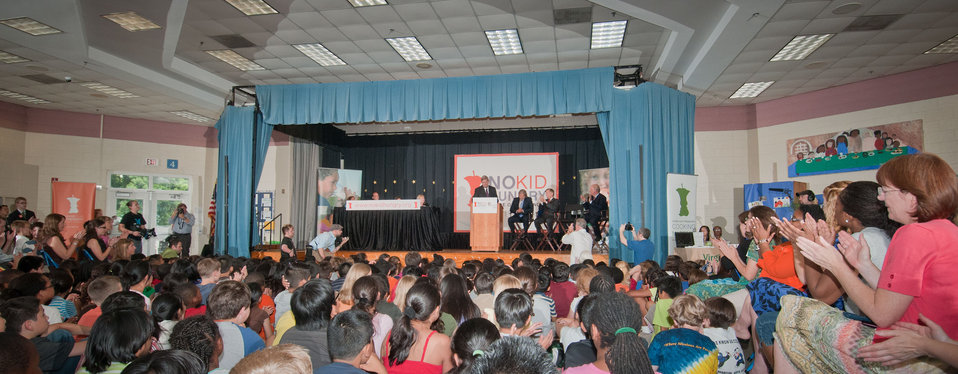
U.S. Department of Agriculture Secretary Tom Vilsack, helped launch the Virginia No Kid Hungry Campaign at Barcroft Elementary School in Arlington, VA, on Tuesday, June 7, 2011. Vilsack said, “ We know our strength comes from out partnerships…” Campaign partners include Share our Strength, the Federation of Virginia Food Banks, corporate partners, education leaders, government agencies and community organizations. The Virginia Summer Meals for Kids Program is funded by the USDA and provides free summer meals at hundreds of sites across the Commonwealth of Virginia, but according to a new report released today by the Food Research and Action Center, more than 80 percent of those eligible do not participate. Governor McDonnell announced and stressed that all parents who want free meals for their kids in need, can simply call 211 to find a summer meals site near them.